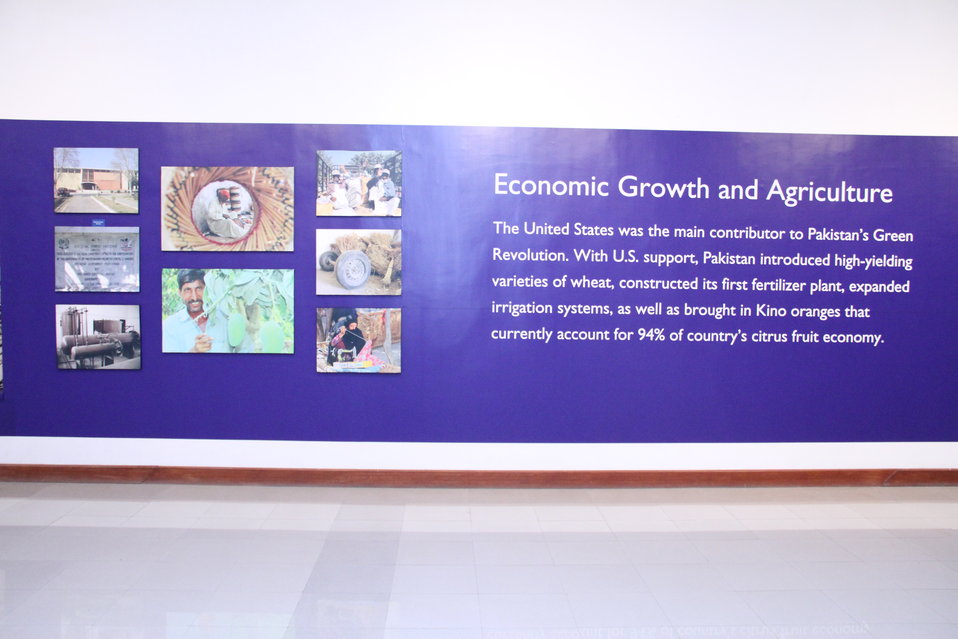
Photo Exhibition Celebrate US-PAK Cooperation at PNCA, Islamabad on April 13, 2012

Photo Exhibition